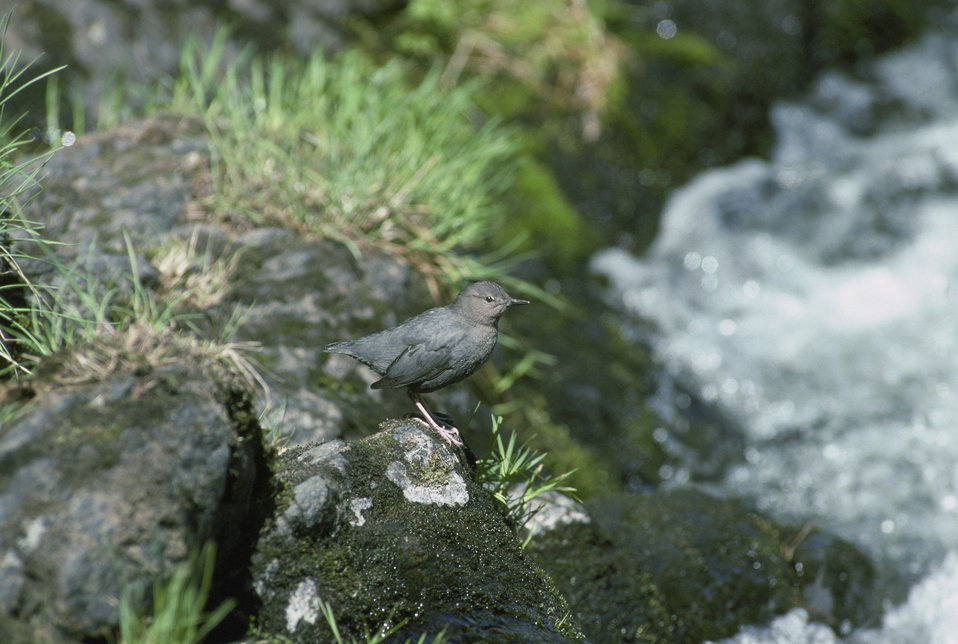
American dipper

Bird standing on rocks among vegetation at edge of rushing water of Three Sisters Creek on Kodiak Island.